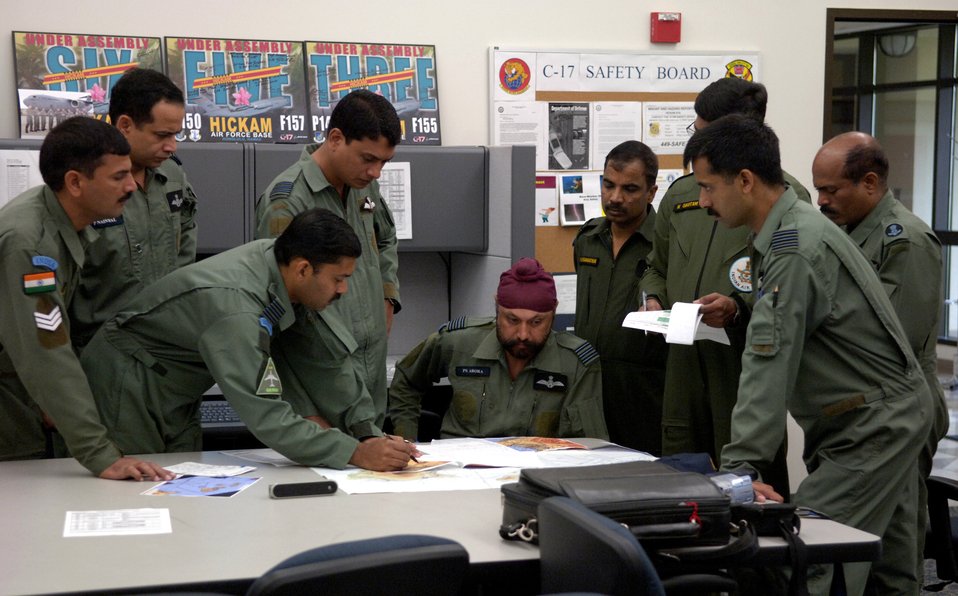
Airmen fly with Indian air force counterparts

An aircrew from the Indian air force conducts a preflight briefing before taking off on a training mission from Hickam Air Force Base, Hawaii, Sept. 20.